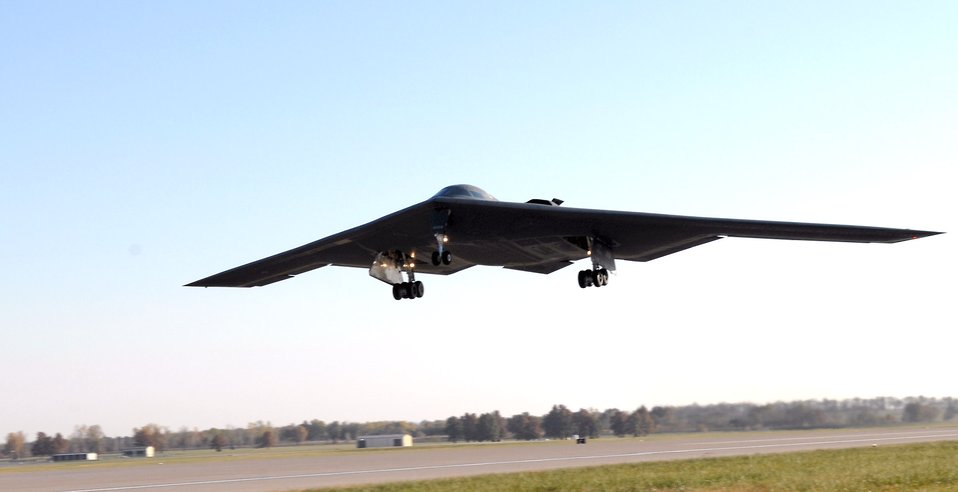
B-2 accident report released

Air Combat Command officials released a report June 5 on the Feb. 23 crash of a B-2 Spirit at Andersen Air Force Base, Guam. The investigation revealed distorted data by the B-2's air data system ulimately caused the crash.